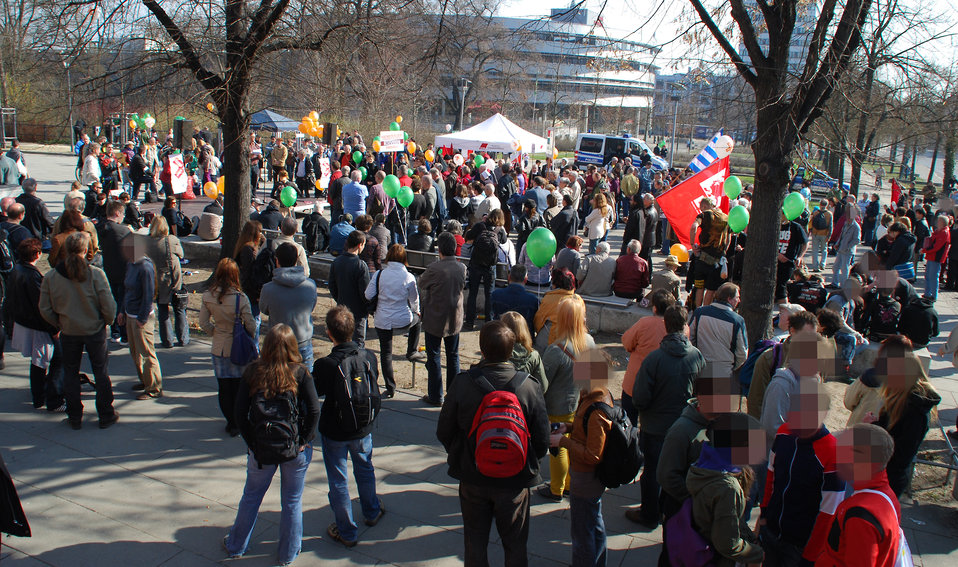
Proteste gegen den Nazi-Aufmarsch am 24.3.2012 in Frankfurt (Oder)